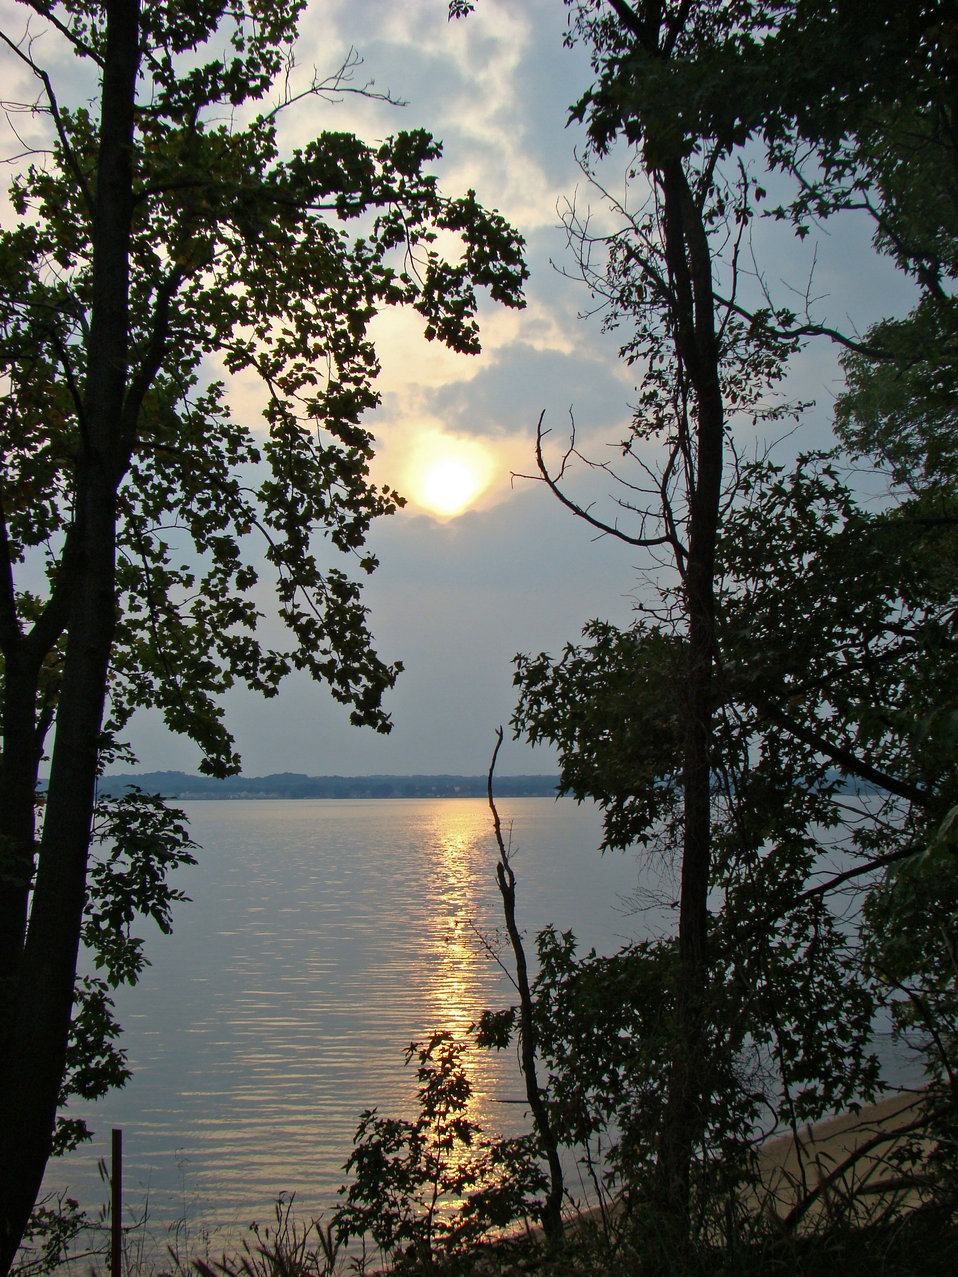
Potomac River at sunset

Mason Neck National Wildlife Refuge, VA.